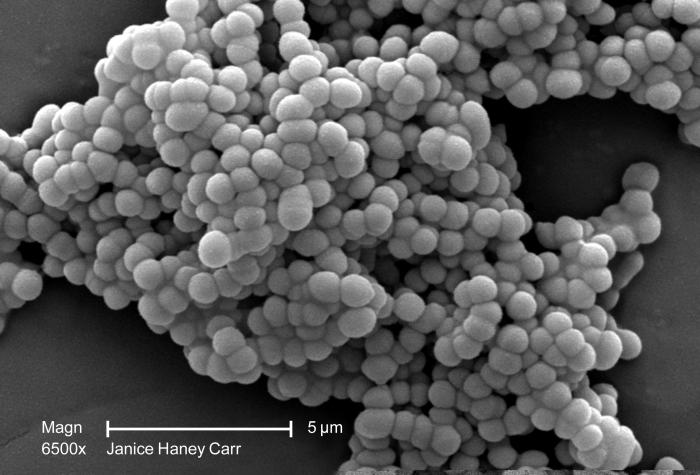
Under a moderately-high magnification of 6,500X, this scanning electron micrograph (SEM) revealed a cluster of Gram-positive, beta-hemolytic Group C Streptococcus sp. bacteria.